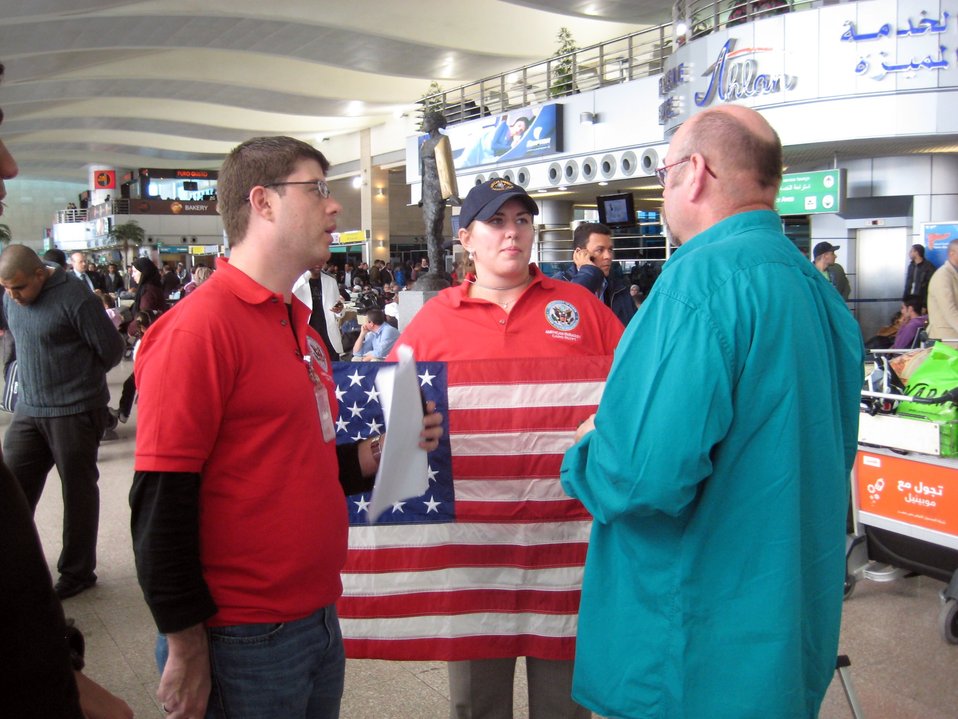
Embassy Cairo Officers Lenert and Adams Search for American Citizens at Cairo International Airport

Public Diplomacy Officer Adam Lenert and Consular Affairs Officer Jessica Adams of U.S. Embassy Cairo search for American citizens at the Cairo International Airport in Egypt on February 3, 2011.